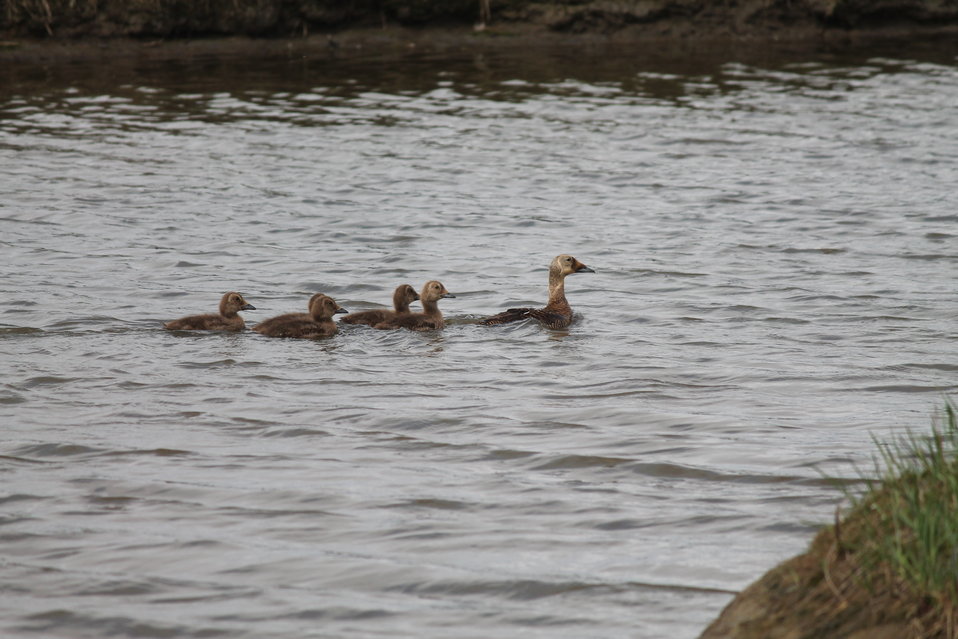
Spectacled Eider Brood

Brood observations were part of a graduate research project that occurred from 2010-2012. Researchers sat in towers and observed and documented brood activities.

USFWS Yukon Delta NWR